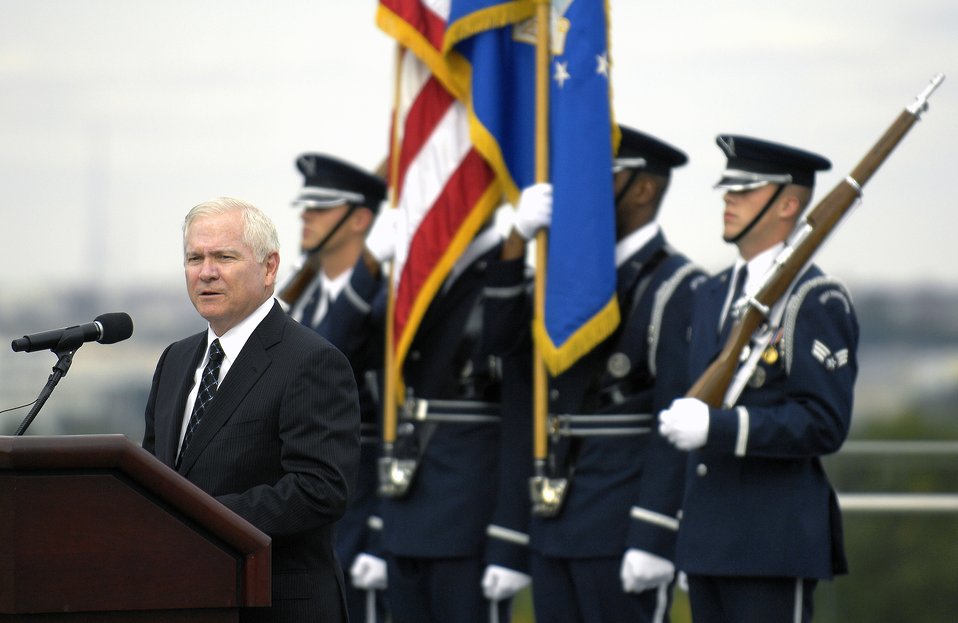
Secretary of Defense Robert M. Gates

U.S. Defense Secretary Robert M. Gates gives his remarks prior to Secretary of the Air Force Michael B. Donley's swearing in by Secretary Gates at the Air Force Memorial in Arlington, Va., Oct. 17.